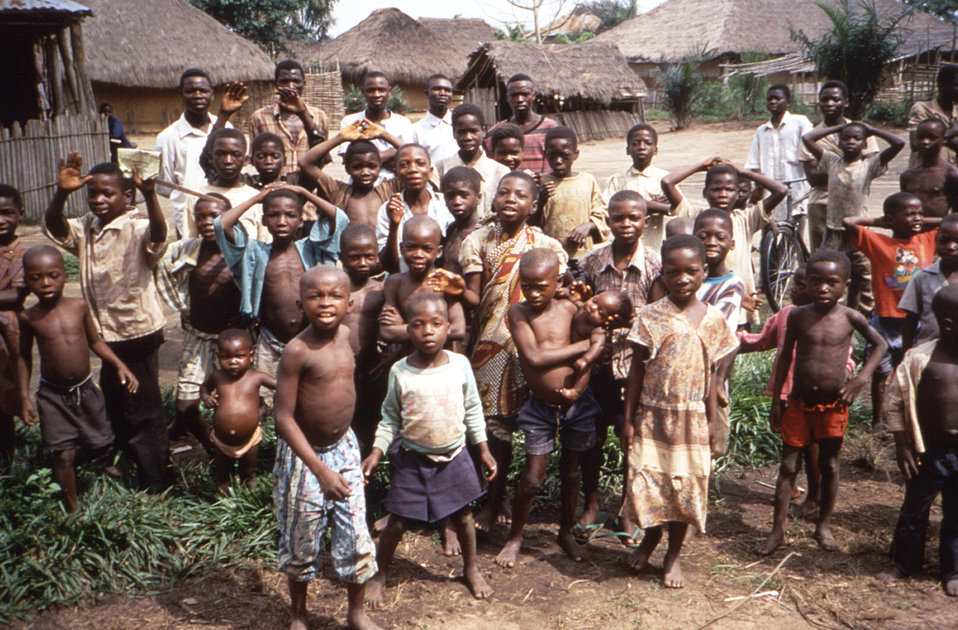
This image was created during an investigation into an outbreak of monkeypox, which took place in the Democratic Republic of the Congo (DRC), 1996 to 1997, formerly Zaire. This particular view depicted a large group of children, as they were gathering for a picture in the village of Ekanga, located within the Katako-Kombe Health Zone, of the DRC.